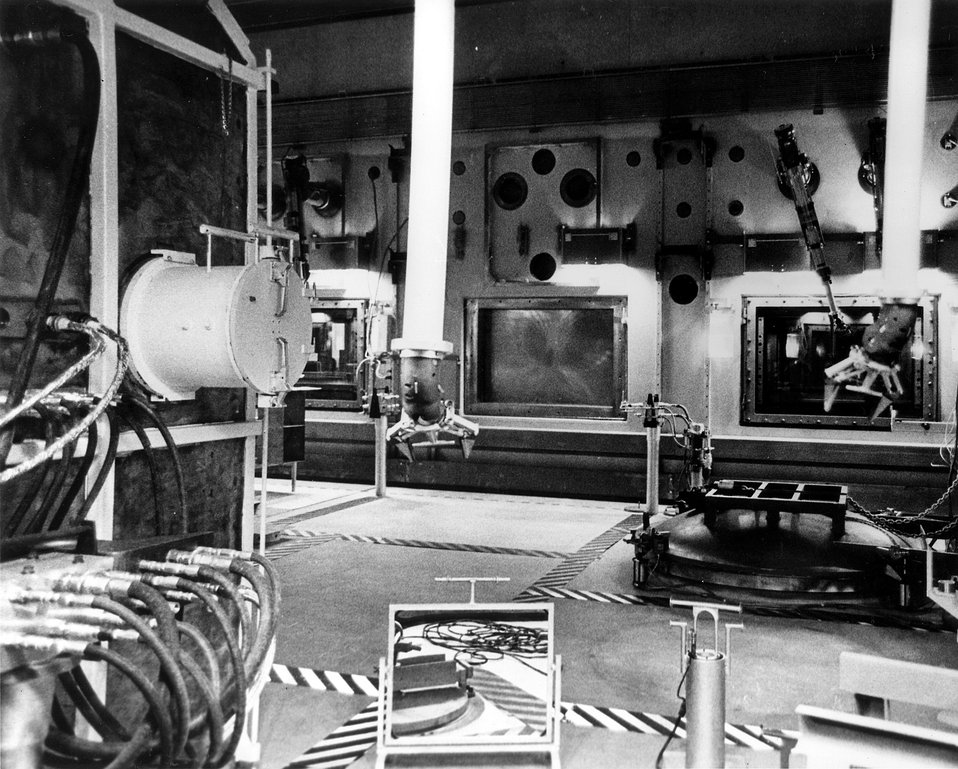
A view of the Argon cell at the US AEC's Argonne Lab Hot Fuel Examination Facility/North (HFEF/N).
c.1972